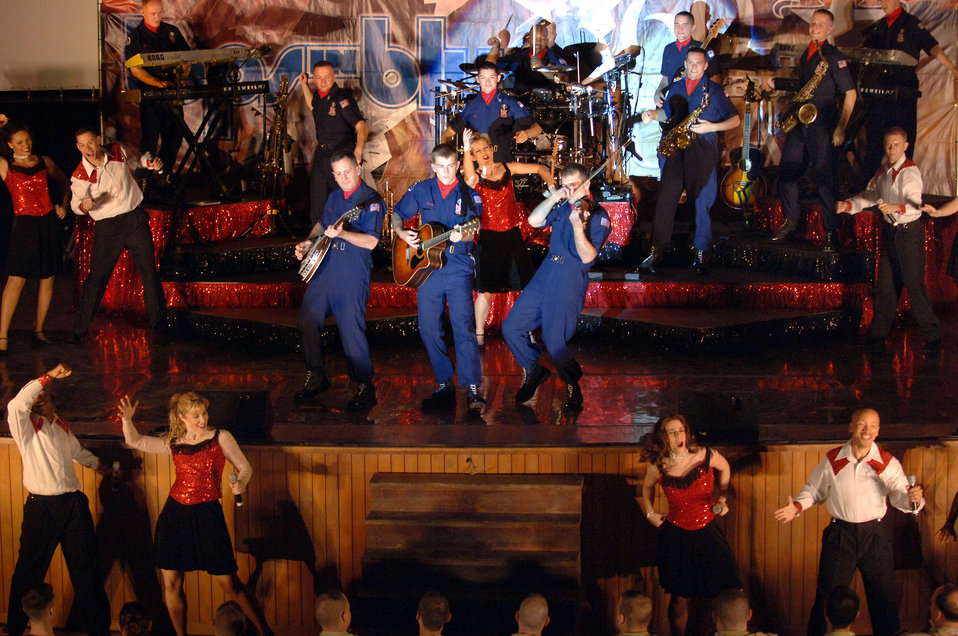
Tops In Blue put on a show for Airmen, Soldiers at Balad

Members of Tops In Blue 2007 perform for servicemembers during a performance April 28 at Balad Air Base, Iraq. Thirty eight active-duty Airmen with the Air Force's premier expeditionary entertainers set out in mid-April to kick off their 2007 tour singing and dancing their way through the area of responsibility. They will tour Southwest Asia for three weeks, and continue their 2007 tour through February 2008.